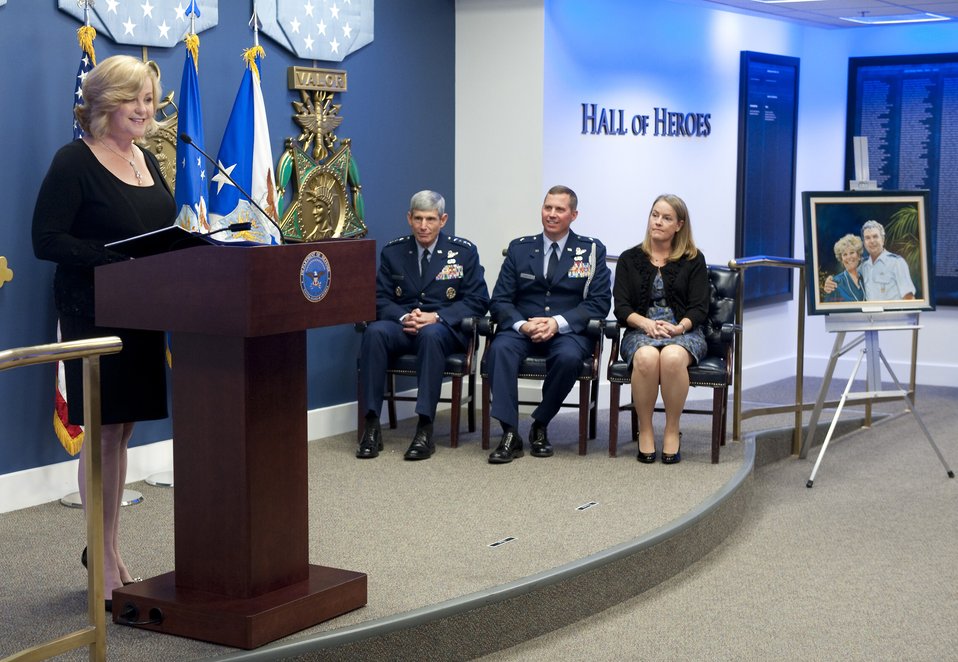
O'Malley Award

Sharon O'Malley Burg (left) talks about the legacy of her parents, General and Mrs. Jerome F. O'Malley, during a ceremony in the Pentagon Oct. 4, 2010, where Air Force Chief of Staff Gen. Norton Schwartz (seated left) presented the 2010 General and Mrs. Jerome F. O'Malley award to Brig. Gen. Thomas W. Bergeson and his wife Pamela. The award is presented annually to the wing commander and spouse team who have best exhibited their own courage, power, grace and beauty in caring for Air Force families. The award was established after the O'Malleys, who were known for their leadership and contributions to Air Force families and communities, were tragically killed in a plane crash in 1985.